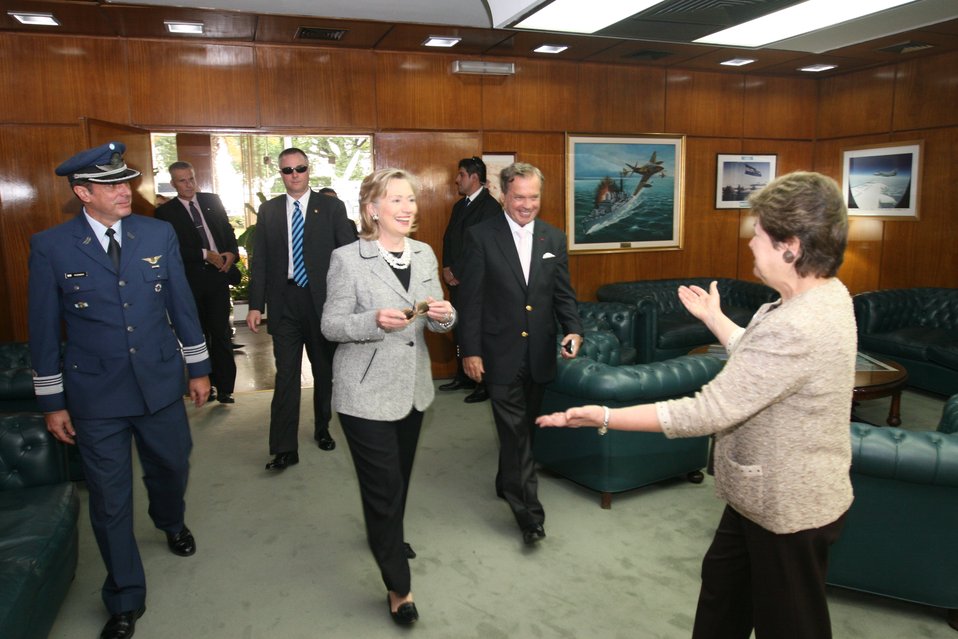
Secretary Clinton Visits Buenos Aires, Argentina

U.S. Secretary of State Hillary Rodham Clinton
Buenos Aires, Argentina March 2, 2010.